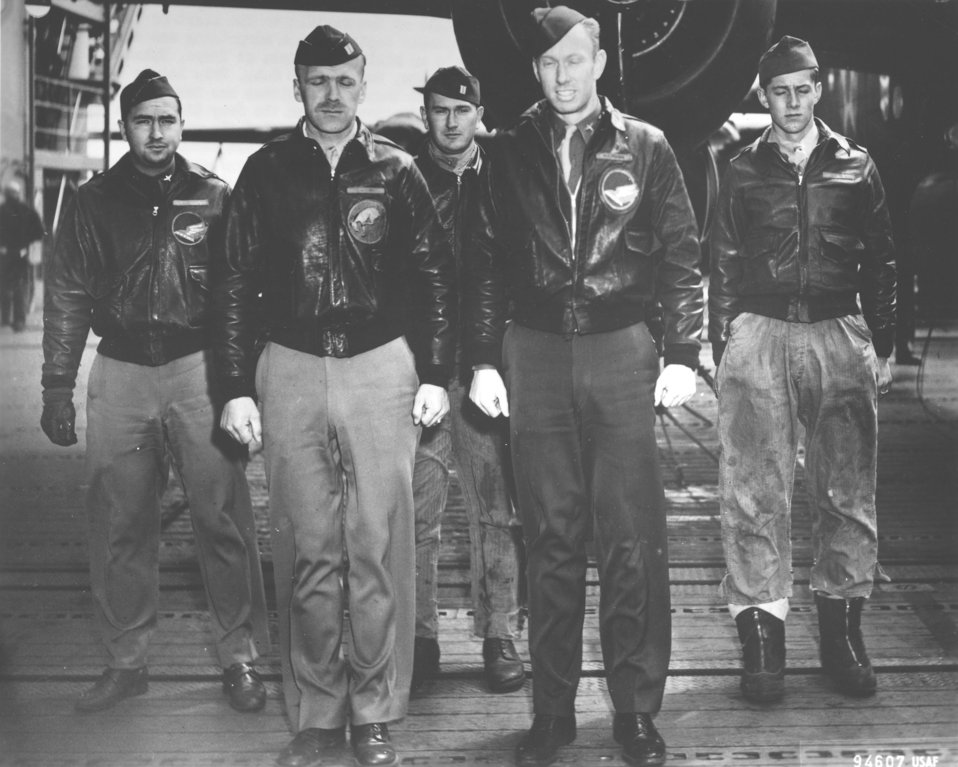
Doolittle Tokyo Raiders, Crew No. 8

Crew No. 8 (Plane #40-2242, target Tokyo): 95th Bombardment Squadron, front row: Capt. Edward J. York, pilot; and Lt. Robert G. Emmens, copilot; back row: Lt. Nolan A. Herndon, navigator/bombardier; Staff Sgt. Theodore H. Laban, flight engineer; and Sgt. David W. Pohl, gunner.